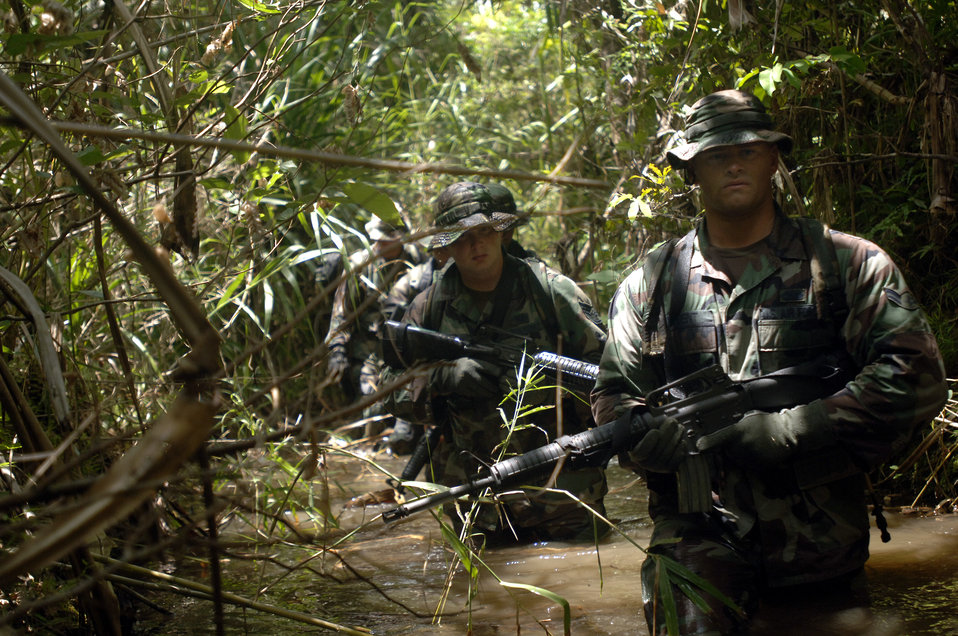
Special Response Team Training Course

ANDERSEN AIR FORCE BASE, Guam -- Airman 1st Class Dennis Nugent trudges in hip-high muddy waters deep in the jungles of southern Guam while on a patrolling exercise during the Special Response Team Course held at Commander Naval Forces Marianas. Airman Nugent is assigned to the 613th Contingency Response Group.